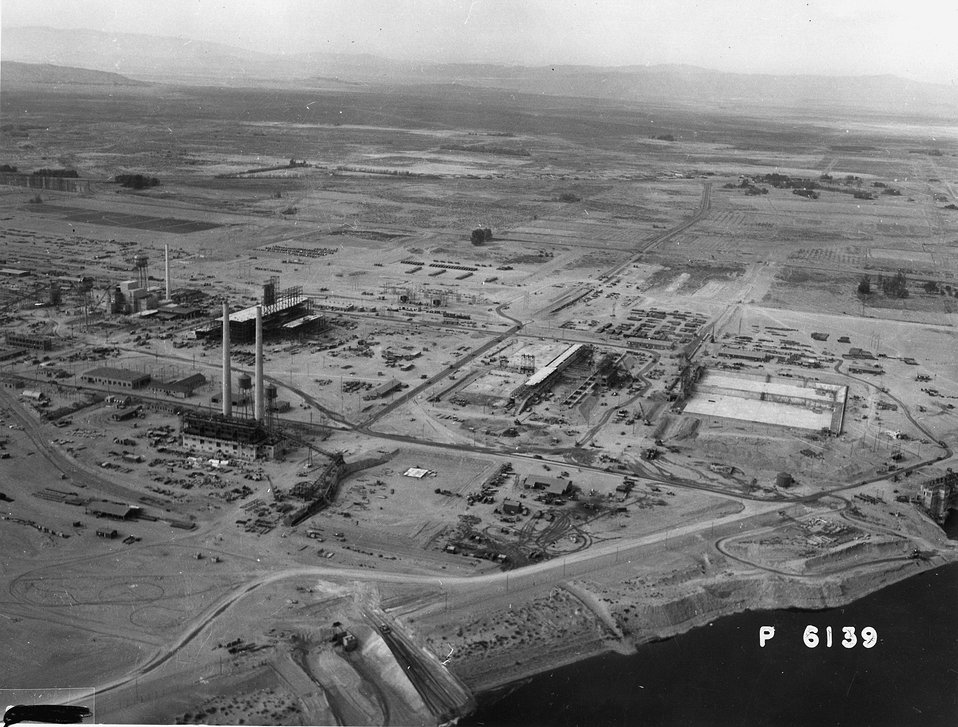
Pile Area. c. 1956